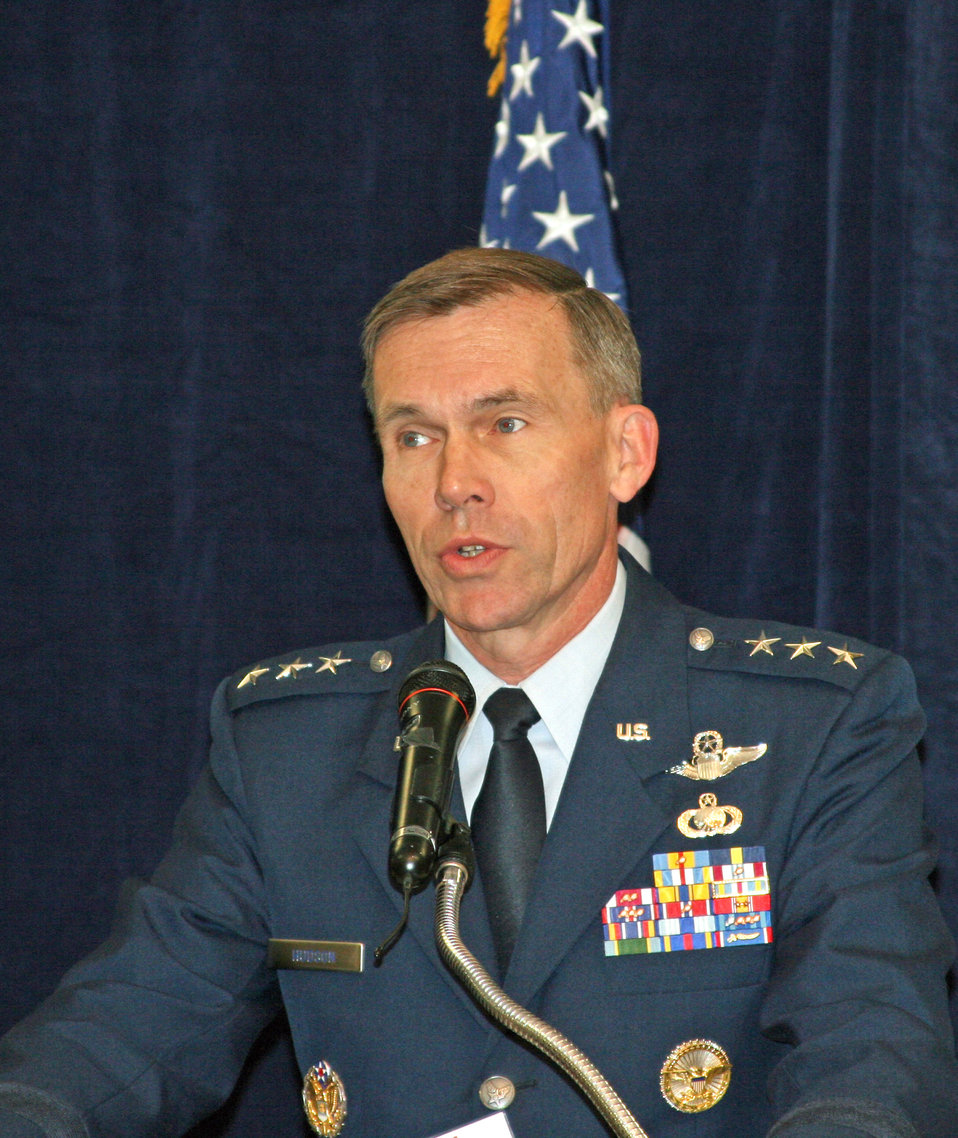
Conference focuses on challenges facing acquisition workforce

Lt. Gen. Jack Hudson speaks to conferees during a panel discussion on improving the acquisition process at Wright-Patterson Air Force Base, Ohio on April 22. Nearly 500 government and industry professionals attended Defense Acquisition University's Department of Defense Acquisition Insight Days. General Hudson is the Aeronautical Systems Center commander.